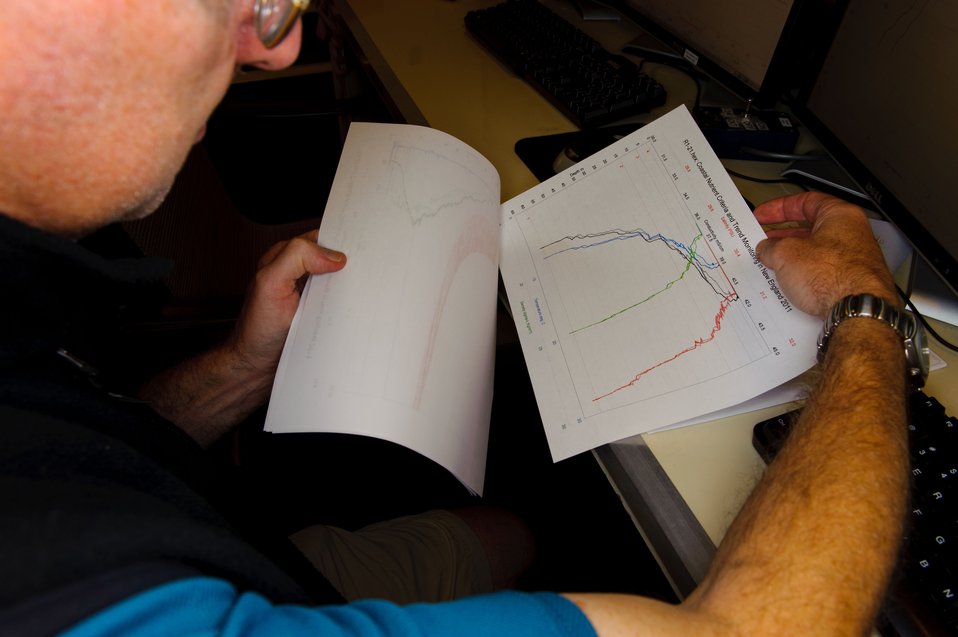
August 6, 2011 The CTD graphs are studied in our onboard dry lab

CTD stands for 'conductivity, temperature, and depth'

From our dry lab on the ship we can monitor, and in some cases remotely operate our equipment.